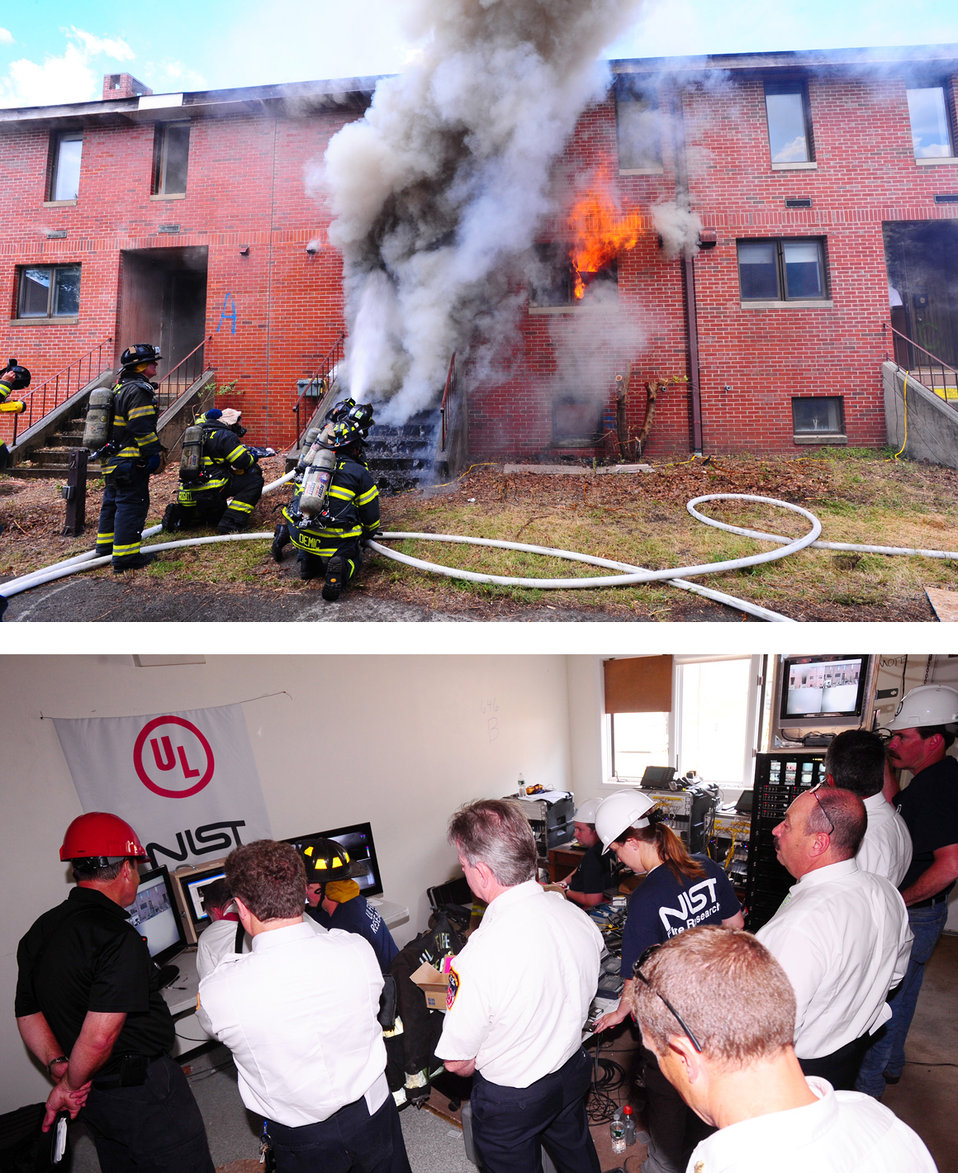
Fire Test

The New York City Fire Department, NIST and Underwriters Laboratories set fire to 20 abandoned townhouses on Governors Island, New York, in a series of experiments to test the conventional wisdom on, and new tactics for, controlling fires and rescuing occupants inside burning homes.